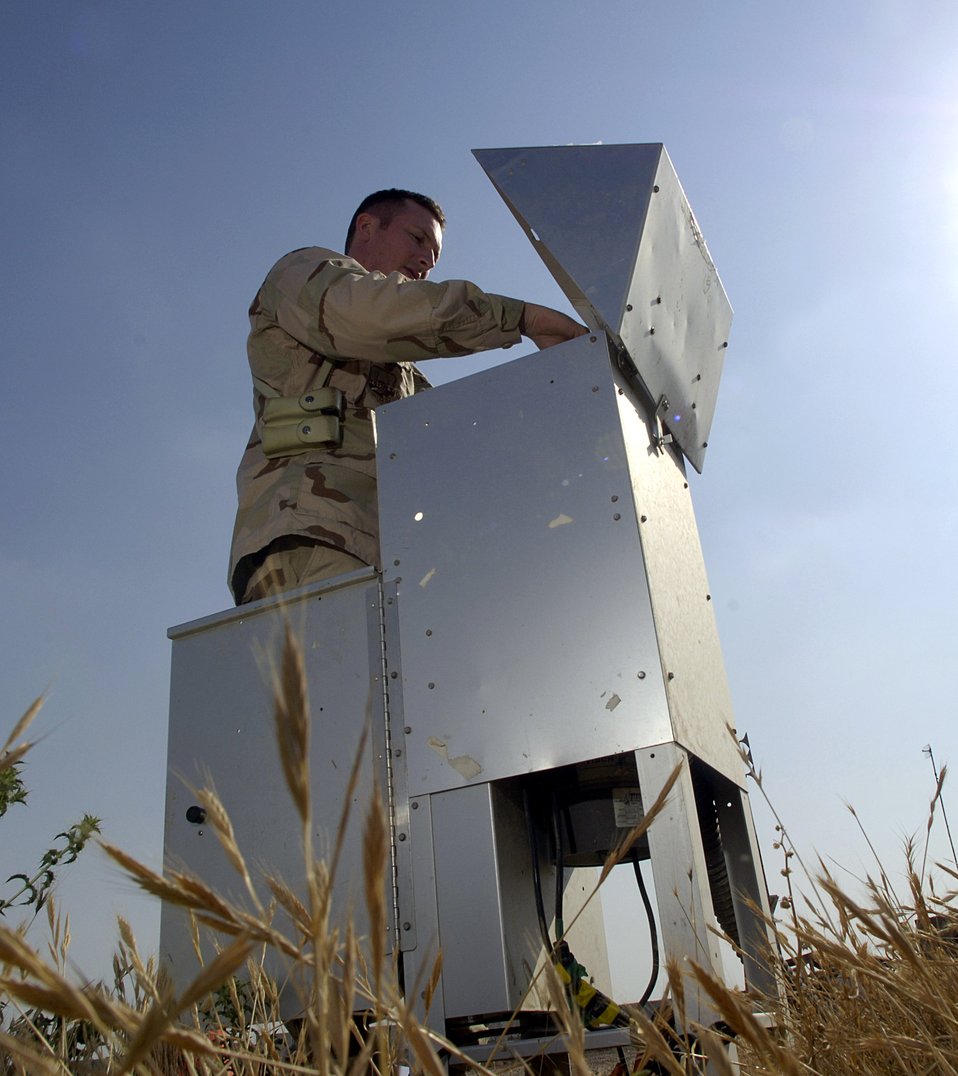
Bioenvironmental engineers keep Airmen safe

Capt. Charles Toth checks a monitoring device April 13 at Balad Air Base, Iraq, for common pesticides and other environmental hazardous chemicals in the air. Captain Toth is the bioenvironmental engineer flight commander. Bioenvironmental engineers perform environmental, occupational and radiological surveillance in order to protect and maintain a healthy work force, and they serve as mission enhancers during emergency management response operations.